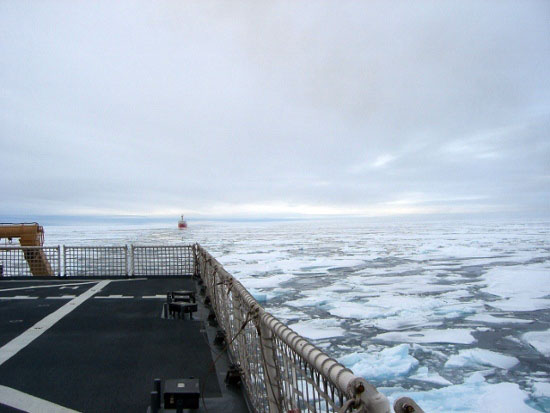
U.S.-Canada Fourth Joint Mission To Map the Continental Shelf in the Arctic Ocean

Views of the U.S.-Canada fourth joint mission to map the continental shelf in the Arctic Ocean in August and September 2011. The 2011 joint mission employed the flagship icebreaker from each country, the U.S. Coast Guard Cutter Healy and the Canadian Coast Guard Ship Louis S. St-Laurent (LSSL), with each ship performing different functions and one ship breaking ice for the other.